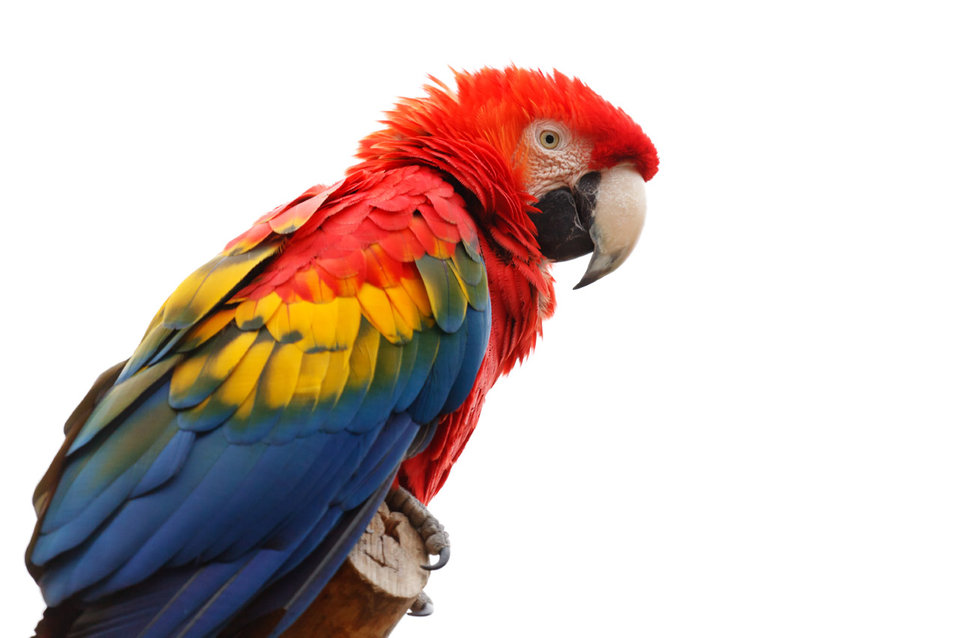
Scarlet macaw isolated on white background.